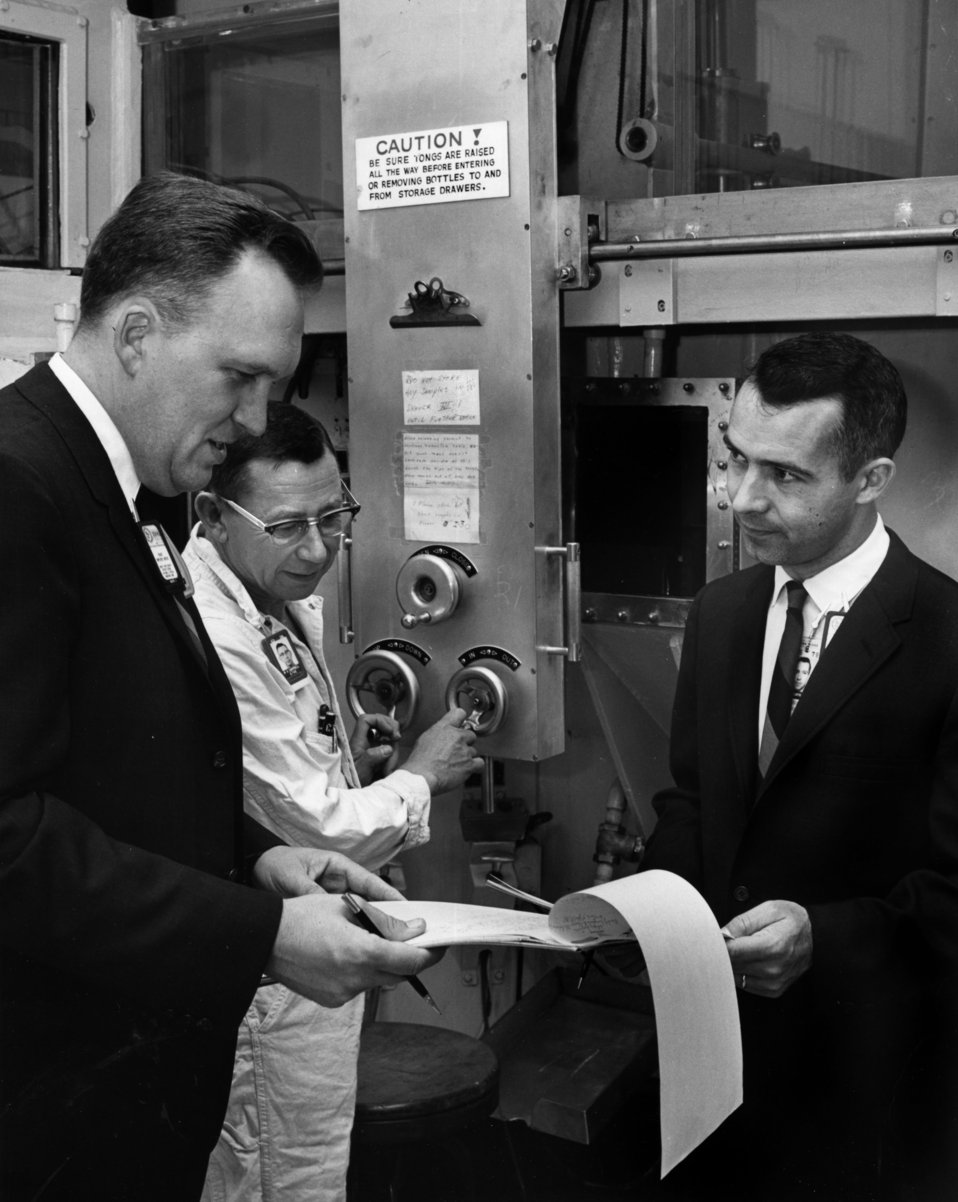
Reviewing Radioisotope Inventory at AEC's Oak Ridge Radioisotope Production Facility

66-180-1 DOE photo Ed Westcott --Billy Hopkins and Stanley Curtis look on as auditors of Raidoisotope Inventory 1966 Oak Ridge Tennessee